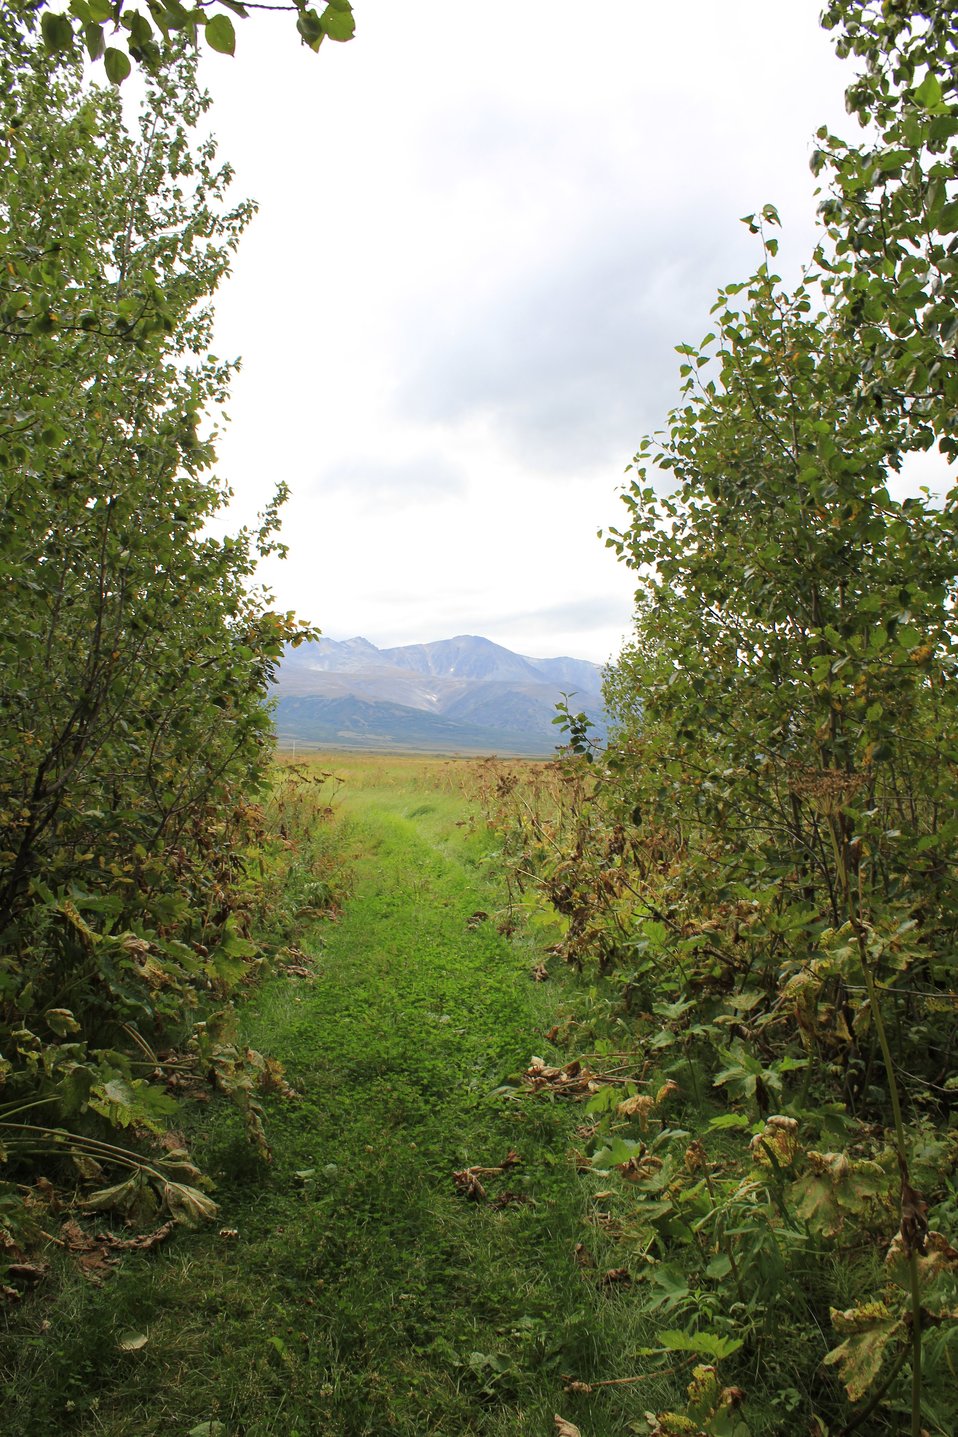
A path through the trees at Pilgrim Hot Springs sized for ATV's . The temperature of the springs is approximately 81 degrees Celsius.